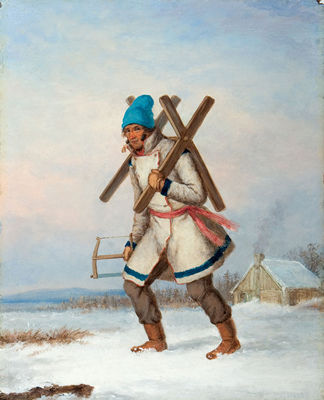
The Woodcutter, oil painting by Cornelius Krieghoff, 10.5 x 8.5 in.